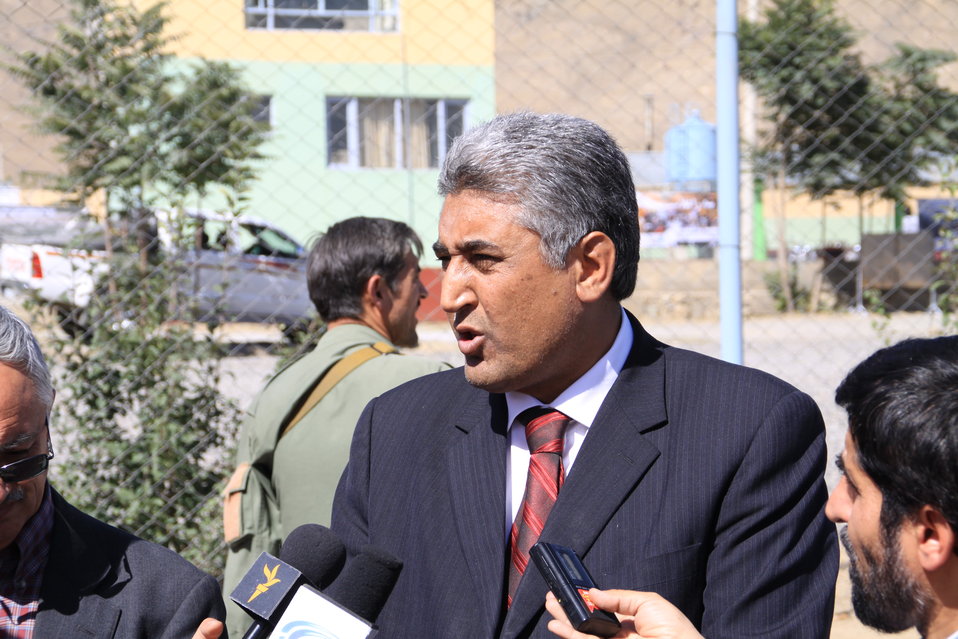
AVIPA Plus Wheat Seed Distribution 101005

US Ambassador Karl Eikenberry and USAID Acting Mission Director Kevin Brownawell joined the Minister of Agriculture, Irrigation and Livestock, H.E. Minister Mohammed Rahimi in signing a Memorandum of Understanding and distributing vouchers to area farmers for wheat and fertilizer.

US Ambassador Karl Eikenberry and USAID Acting Mission Director Kevin Brownawell joined the Minister of Agriculture, Irrigation and Livestock, H.E. Minister Mohammed Rahimi in signing a Memorandum of Understanding and distributing vouchers to area farmers for wheat and fertilizer.

US Ambassador Karl Eikenberry and USAID Acting Mission Director Kevin Brownawell joined the Minister of Agriculture, Irrigation and Livestock, H.E. Minister Mohammed Rahimi in signing a Memorandum of Understanding and distributing vouchers to area farmers for wheat and fertilizer.